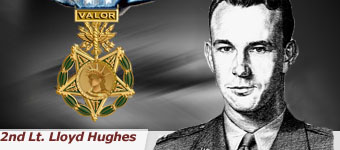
2nd Lt. Lloyd H. Hughes

On Aug. 1, 1943, Operation Tidal Wave took off for the oilfields of Ploesti, Romania, to make a dent in the German war machine. Second Lt. Lloyd